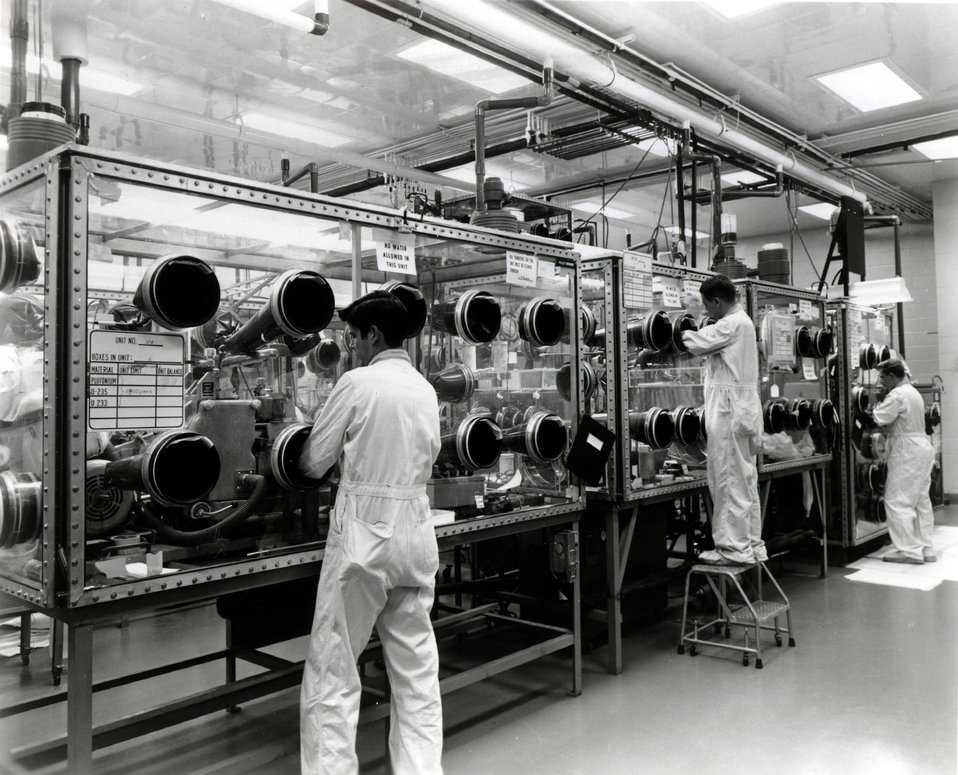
The Fast Flux Test Facility is now scheduled for operation until 1974. However, development work on components for the facility is already underway at a number of contractor and AEC locations. c. 1970.